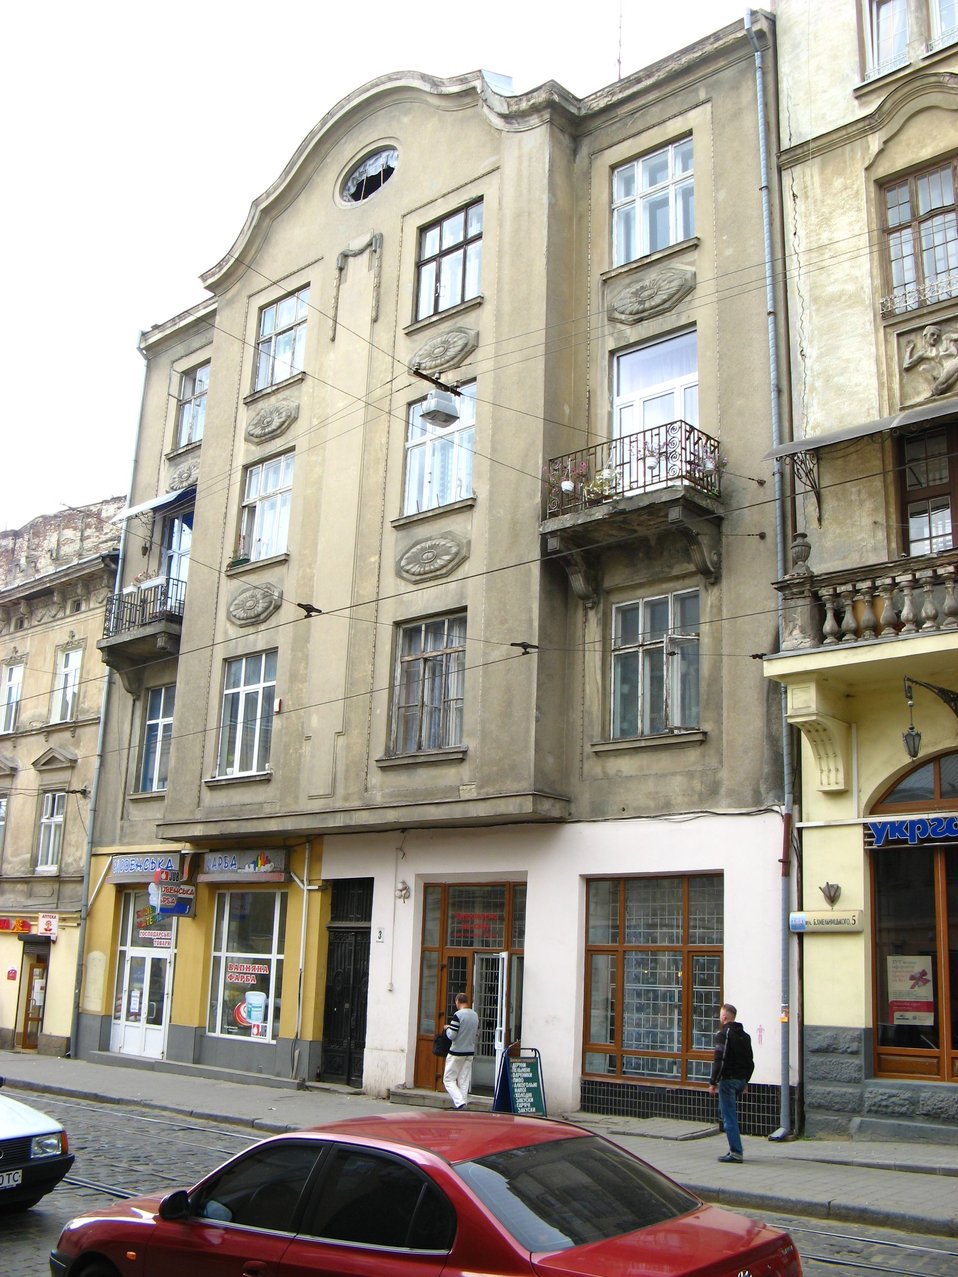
Українська: 03, вул. Б. Хмельницького (Львів)